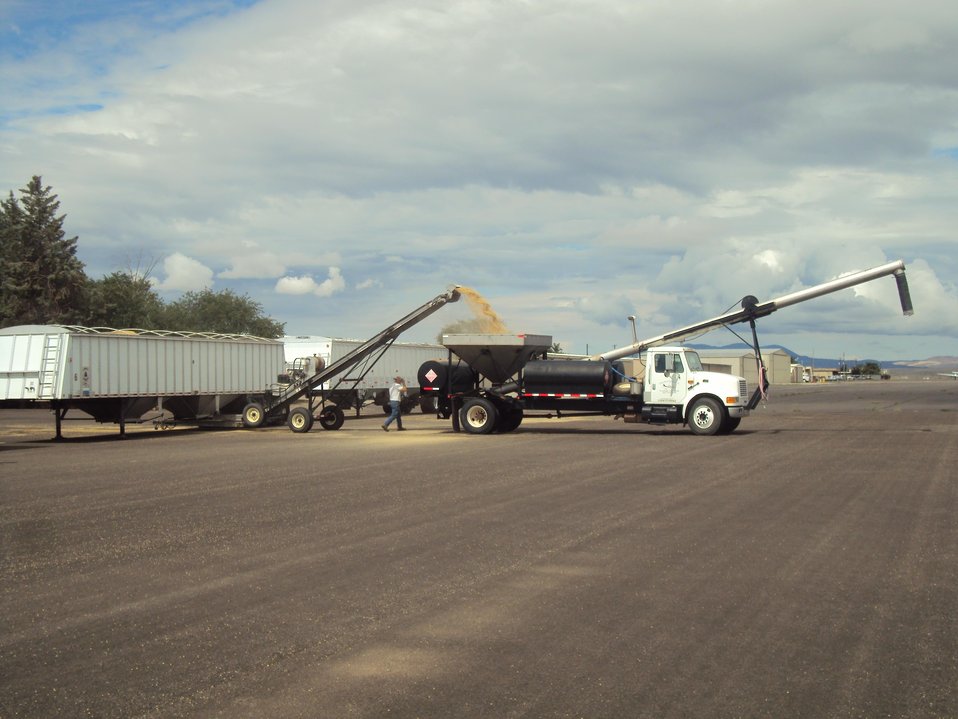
A truck is loaded with seed to resupply an Air Tractor for aerial seeding of severe burned areas of the Silver Fire. The Silver Post Fire response has the Burned Area Emergency Response (BAER) team beginning operations to seed acres of high burn severity and to mulch additional acres. Seeding reduces effects to downstream life, property, and infrastructure by reducing erosion and runoff. Areas of high burn severity are to be seeded with a quick germinating, non-persistent annual cereal barley that would provide rapid ground cover. A small percentage of native perennial species would also be included to give the burned area a jump start in natural recovery, and provide for long-term ground cover. Mulch is the most effective treatment for controlling erosion and runoff, as it provides immediate ground cover. Mulch also assists in stabilizing soil in and around these areas. Aircraft for seeding operations will be based at the Gila National Forest Air Tanker Base.